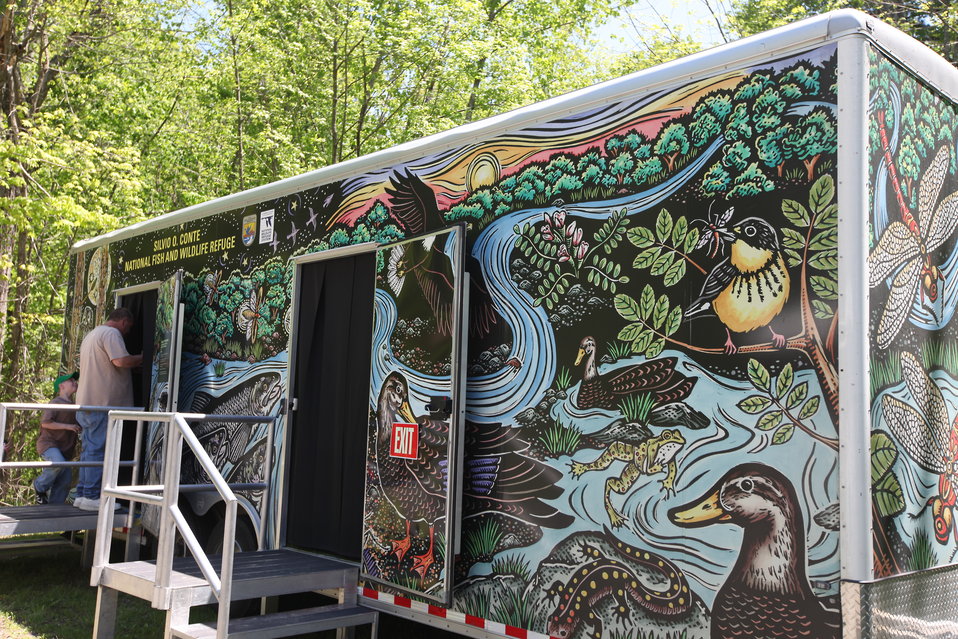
Youth Fishing Derby 2012

Megan Nagel/USFWS